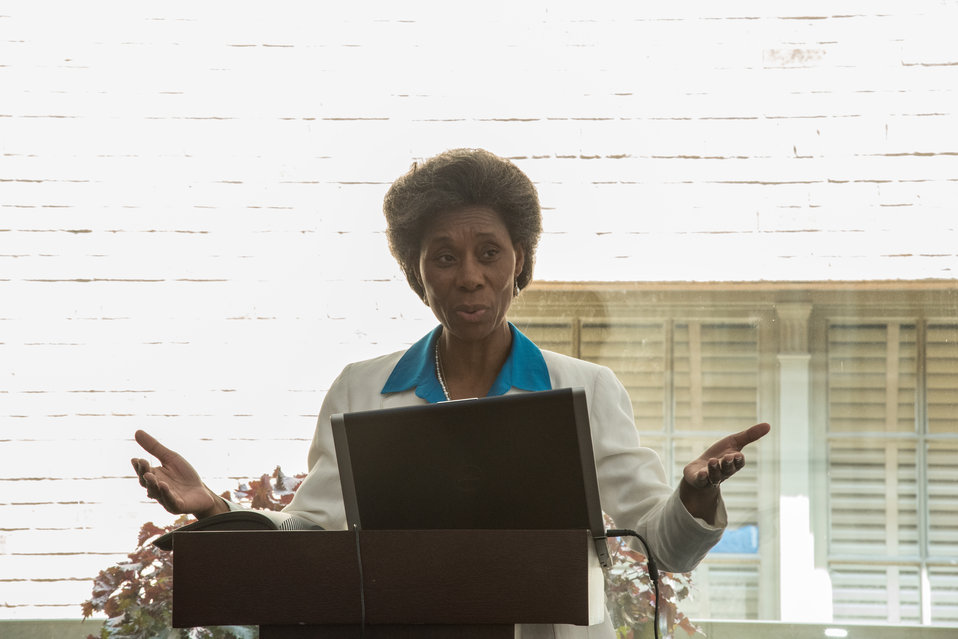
Sage Horizons Consulting Owner Cynthia Gibbs speaks at the U.S. Department of Agriculture’s (USDA) Rural Development (RD) 2nd Annual Cultural Transformation kickoff opening ceremony and forums, themed “Employees Influencing Change,” on Tuesday, Aug. 13, 2013, USDA in Washington, D.C.